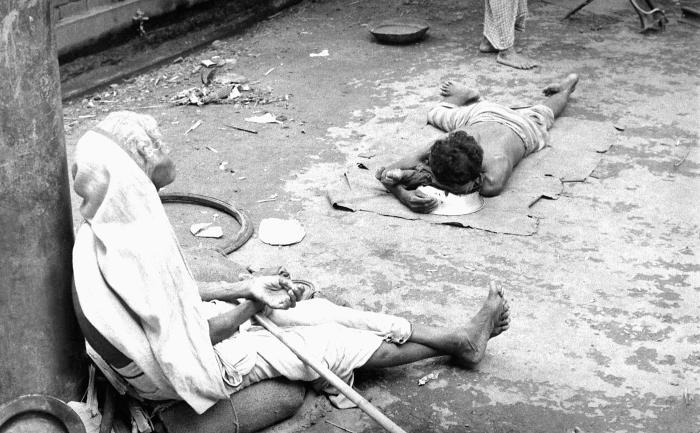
These two Bangladesh townspeople were begging for food to stay alive. Though this image was taken in the 1970s, Bangladesh was, and still is one of the poorest countries in the world. This image was part of a series provided by Dr. Stan Foster, and captured by Pierre Claquin, M.D., B.A.C., who at the time was a member of the World Health Organization's Smallpox Eradication Program. It was part of a series photographed by former E.I.S. officer, Stanley O. Foster M.D., M.P.H., and was one of a series entitled 'The Story of One Smallpox Jeep', which depicted the travails faced by the jeep, and its occupants of public health practitioners, as they road through the Bangladesh countryside in an attempt to eradicate smallpox from the country.